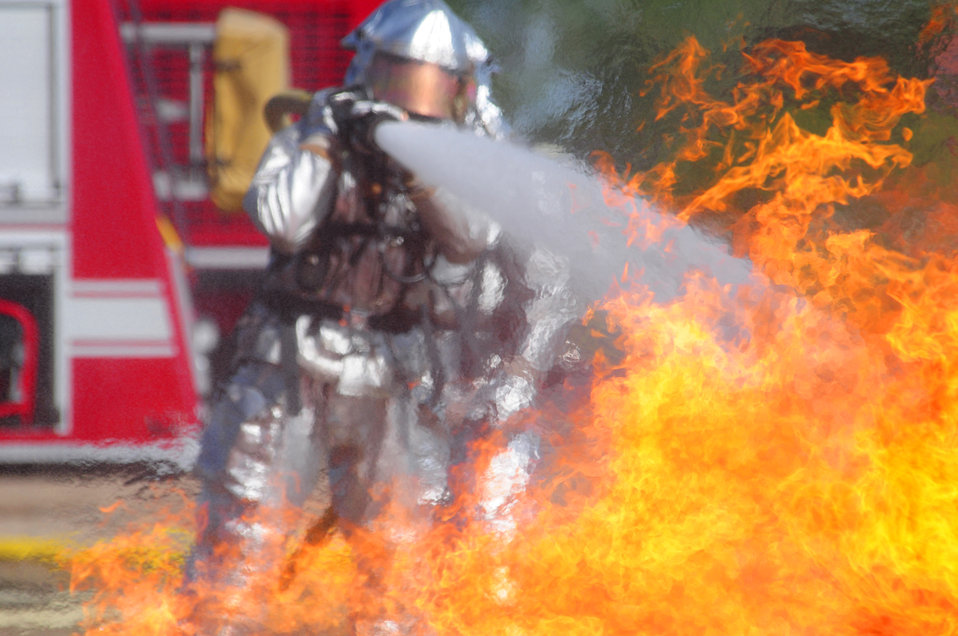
Besting the dragon

Master Sgt. Bruce Bauske leads Staff Sgt. Jon Lague on a two-person hose team June 4, 2010, as they approach a mock aircraft burn pit at the North Dakota Air National Guard's Regional Training Site in Fargo. The burn pit provides realistic training for the firefighters with technically controlled flames emanating from various areas of a metal airplane frame. The Airmen are with the 119th Civil Engineer Squadron.